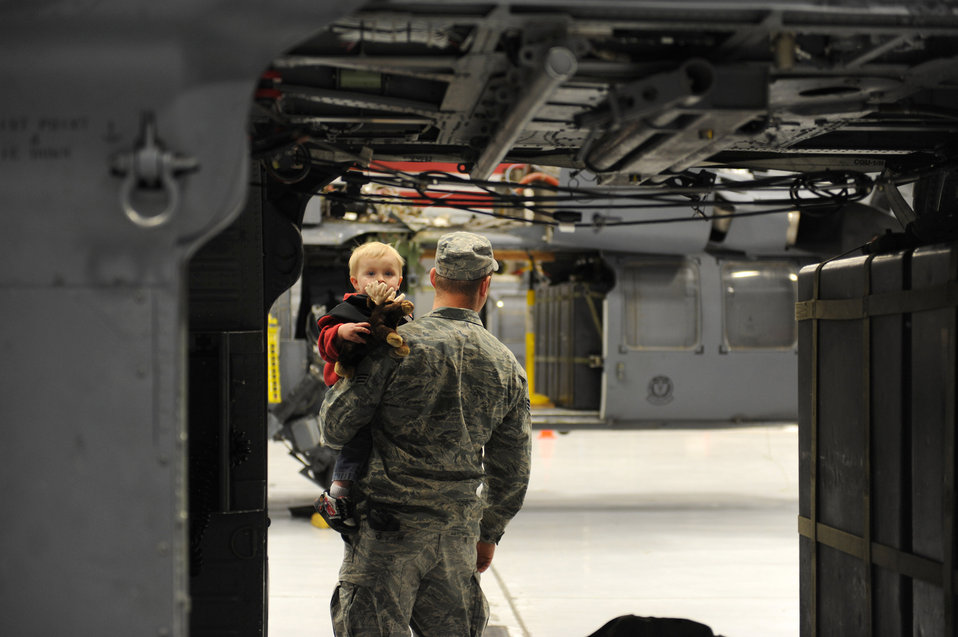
Home for the holidays

Senior Airman Matthew Ohara holds his son, 2-year-old Jacob Ohara, as he peers through the back of a HH-60 Pave Hawk Dec. 6 at Nellis Air Force Base, Nev. Airmen with the 763rd Maintenance Squadron and 66th Rescue Squadron returned home after 3.5 months in Southwest Asia supporting the war on terrorism. Airman Ohara is an HH-60 crew chief assigned to the 763rd MXS.